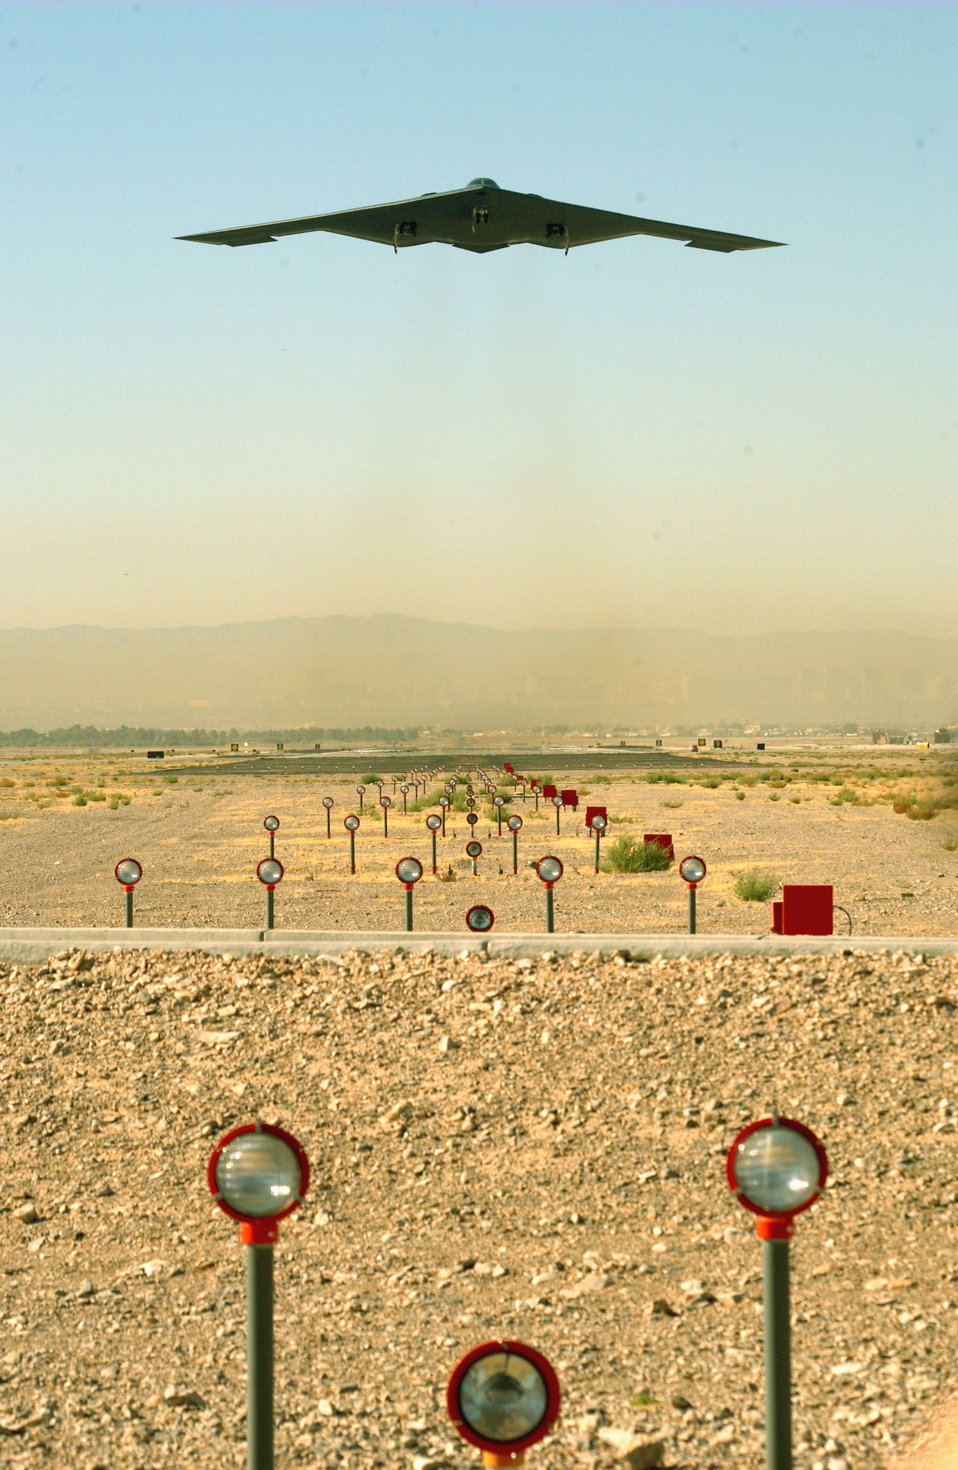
Red Flag 04-01

NELLIS AIR FORCE BASE, Nev. -- A B-2 Spirit takes off from the flightline here on a Red Flag training mission, Oct. 23, 2003. The B-2, a multi-role bomber capable of delivering both conventional and nuclear munitions, brings massive firepower to bear anywhere on the globe.